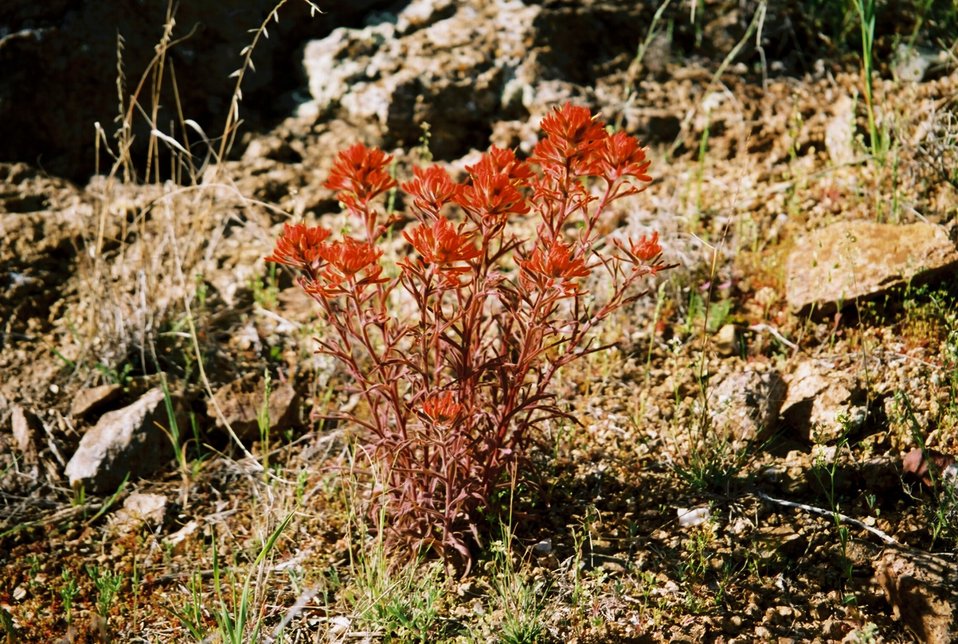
Many different kinds of beautiful wildflowers grow in the Agua Fria National Monument.